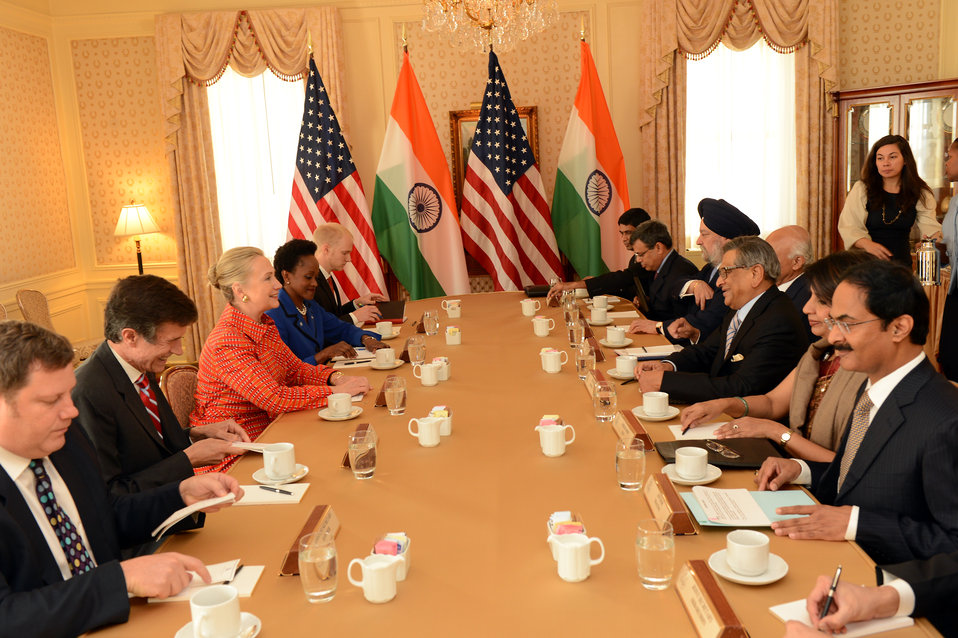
Secretary Clinton Meets With Indian Foreign Minister Krishna

U.S. Secretary of State Hillary Rodham Clinton meets with Indian Foreign Minister S.M. Krishna in New York, New York on October 1, 2012.